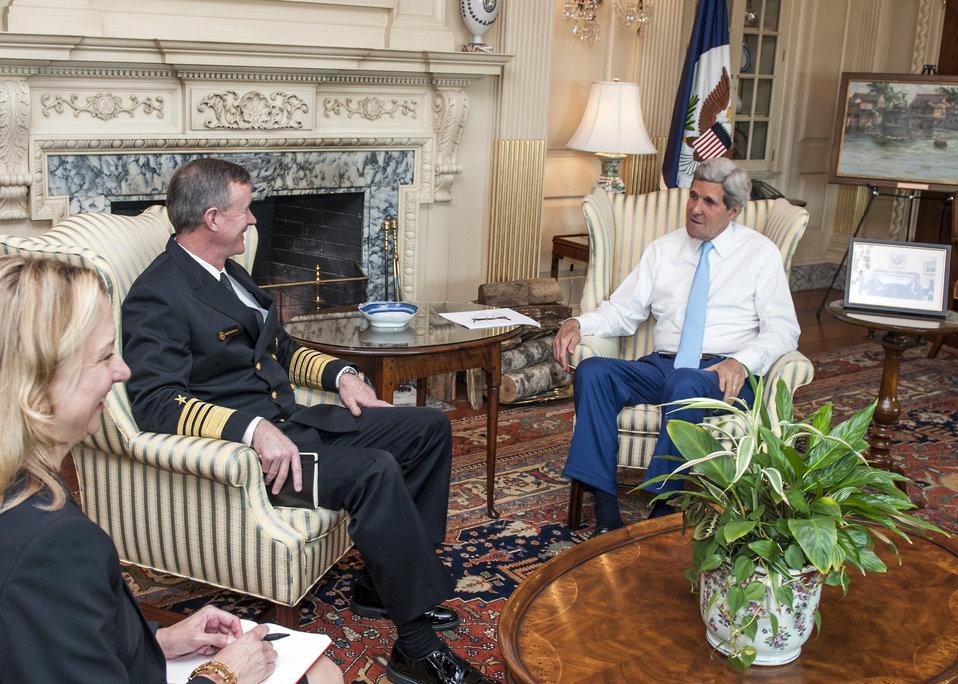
Secretary Kerry Meets With Admiral McRaven

U.S. Secretary of State John Kerry meets with U.S. Admiral William McRaven, Commander of U.S. Special Operations Command, at the U.S. Department of State in Washington, D.C., on May 28, 2014.